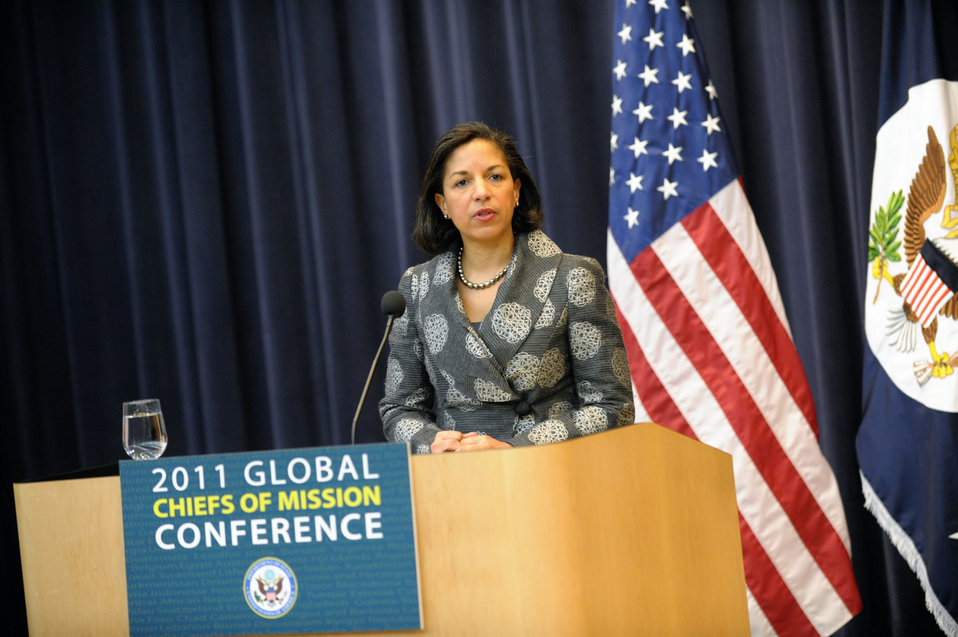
Ambassador Rice Delivers Remarks

U.S. Permanent Representative to the United Nations Susan Rice delivers remarks at the 2011 Global Chiefs of Mission Conference at the U.S. Department of State in Washington, D.C., on February 2, 2011.